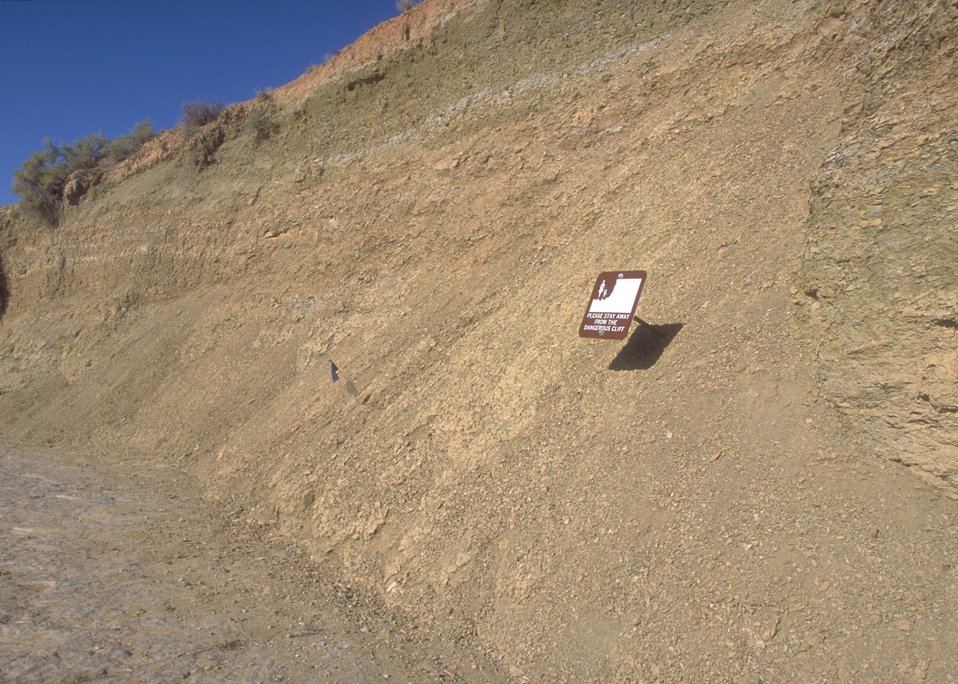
Warning sign at the Red Gulch Dinosaur Tracksite, Worland Field Office.